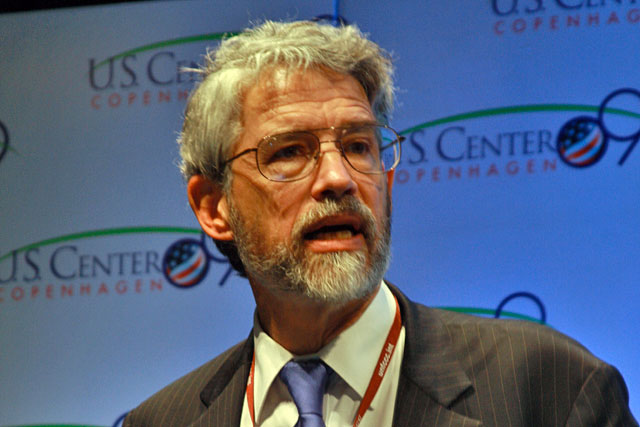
'The Science of Climate Change' Presentation at COP-15

Dr. John P. Holdren, Assistant to the President for Science and Technology and Director of the Office of Science and Technology Policy gives a presentation on 'The Science of Climate Change' at the U.S. Center during COP15 (Conference of the Parties to the UN Framework Convention on Climate Change) in Copenhagen, Denmark December 16, 2009.